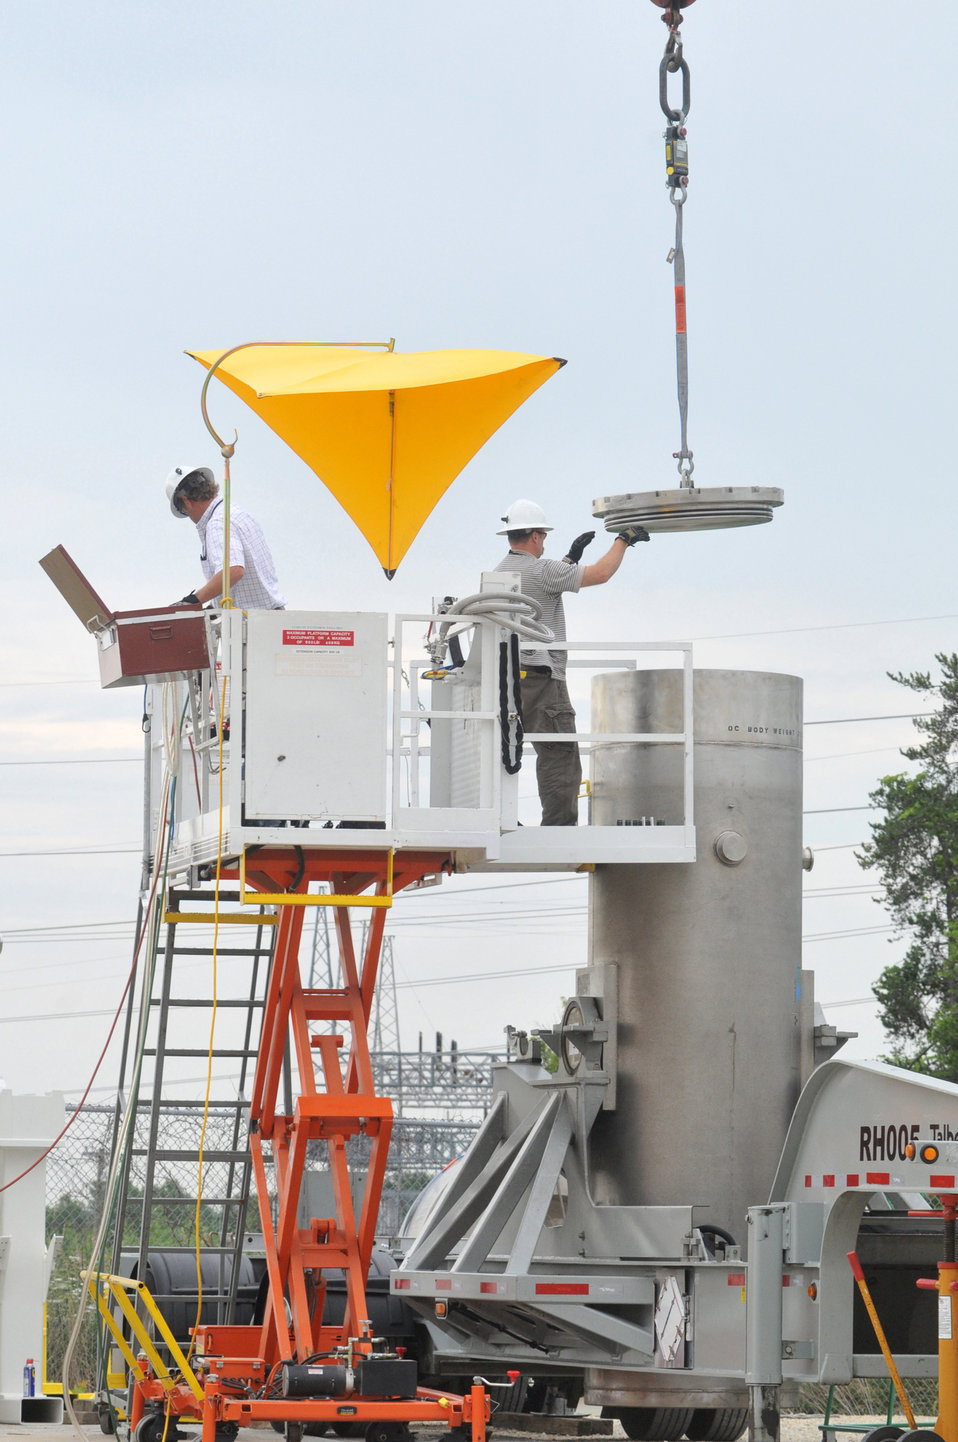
Argonne Forges Ahead in Waste Removal, Facility Demolitions with Recovery Act Help

With the help of $79 million from the Recovery Act, Argonne National Laboratory continues to dramatically reduce its inventory of radioactive materials and waste while making significant progress in its decontamination and demolition (D&D) program.